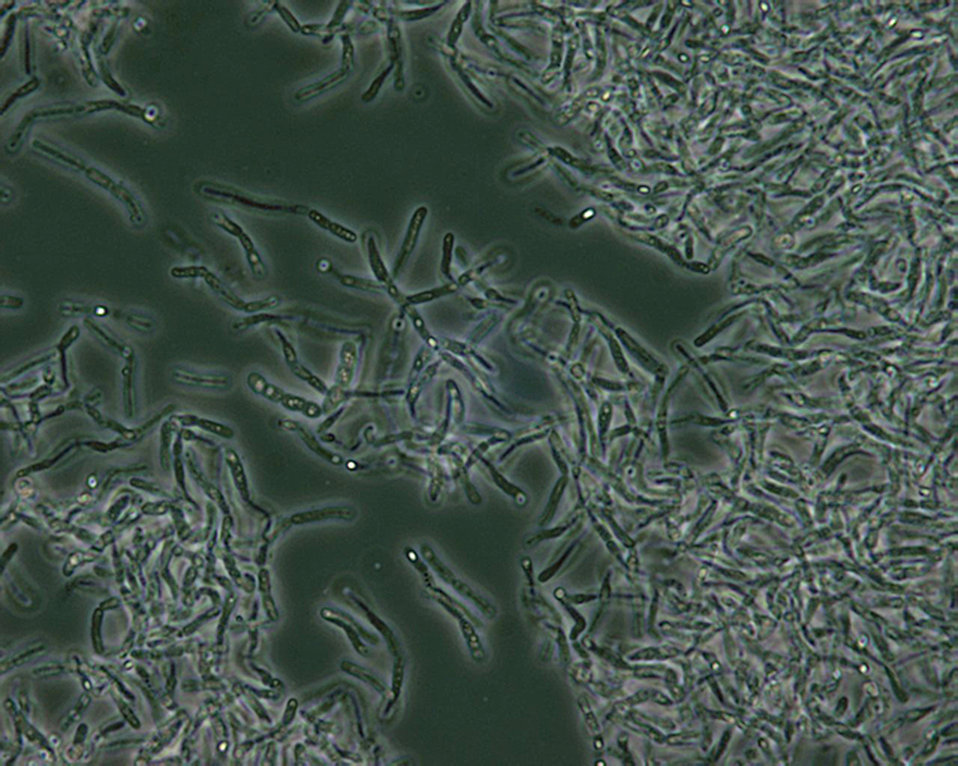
Bacillus anthracis spores seen under phase contrast microscopy.